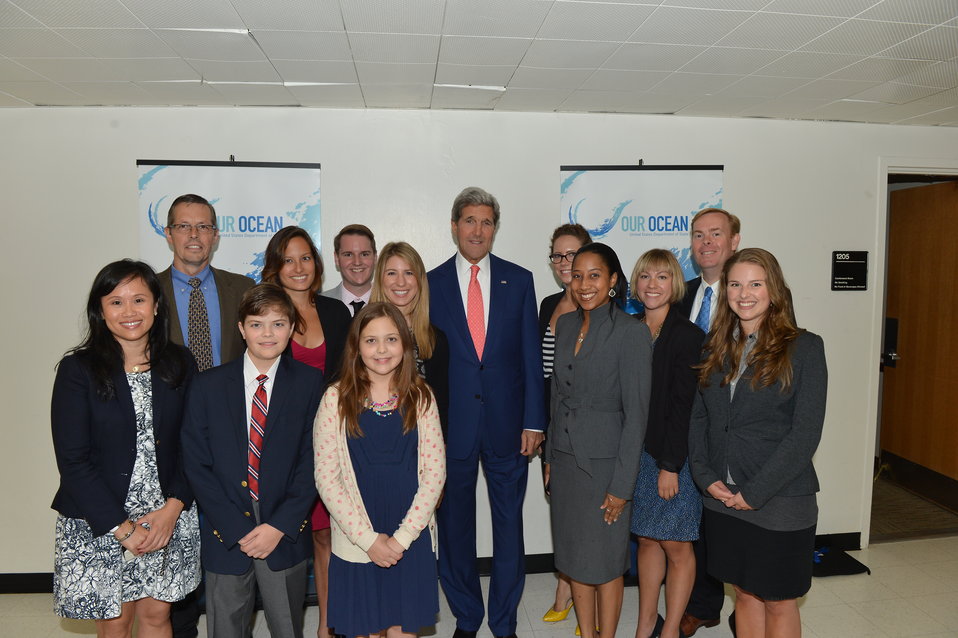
Secretary Kerry and Our Ocean' Meetup Group Participants Pose for Photo

U.S. Secretary of State John Kerry greets and poses for a photo with the 'Our Ocean' Meetup group participants. The participants were selected from a list of applicants to attend the 'Our Ocean' conference at the U.S. Department of State in Washington, D.C. on June 16, 2014.